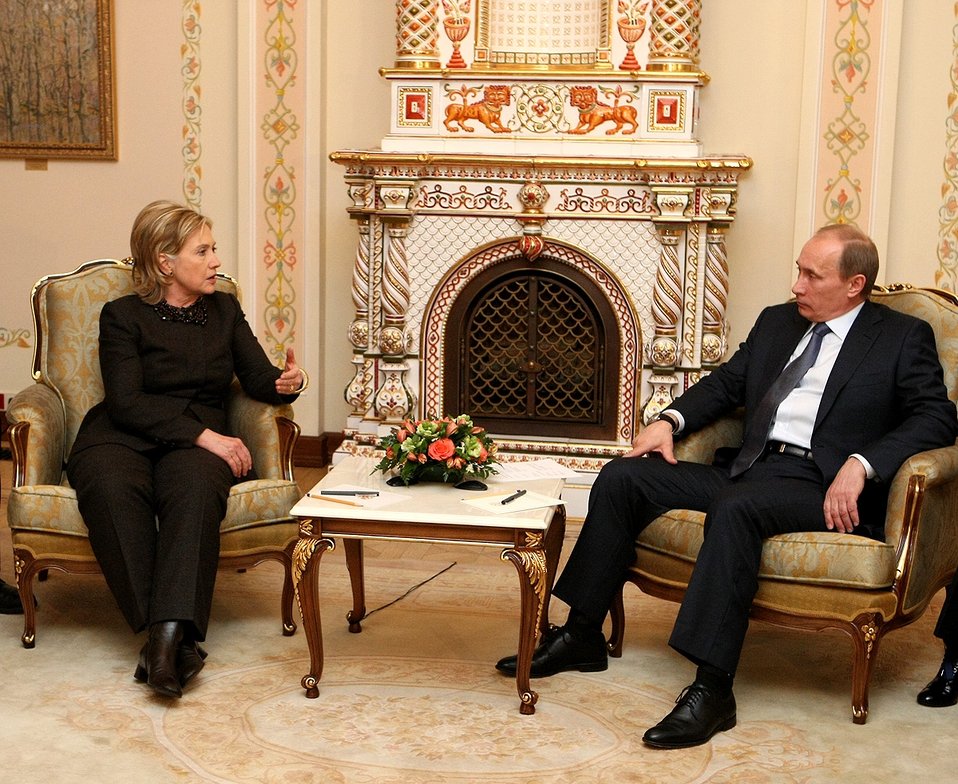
Secretary Clinton With Russian Prime Minister Putin

Russian Prime Minister Vladimir Putin speaks with U.S. Secretary of State Hillary Rodham Clinton during a meeting at the Novo-Ogaryovo just outside Moscow, March 19, 2010.